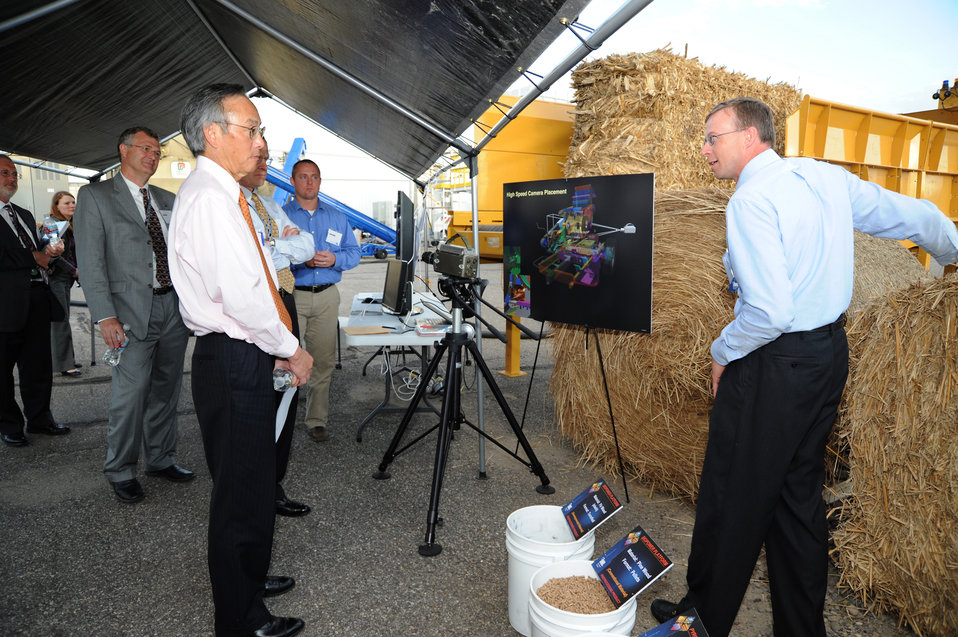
Energy Secretary Steven Chu looks on as Richard Hess explains the flowable characteristics of biomass feedstocks being considered for Idaho National Laboratory's unique process demonstration unit research.